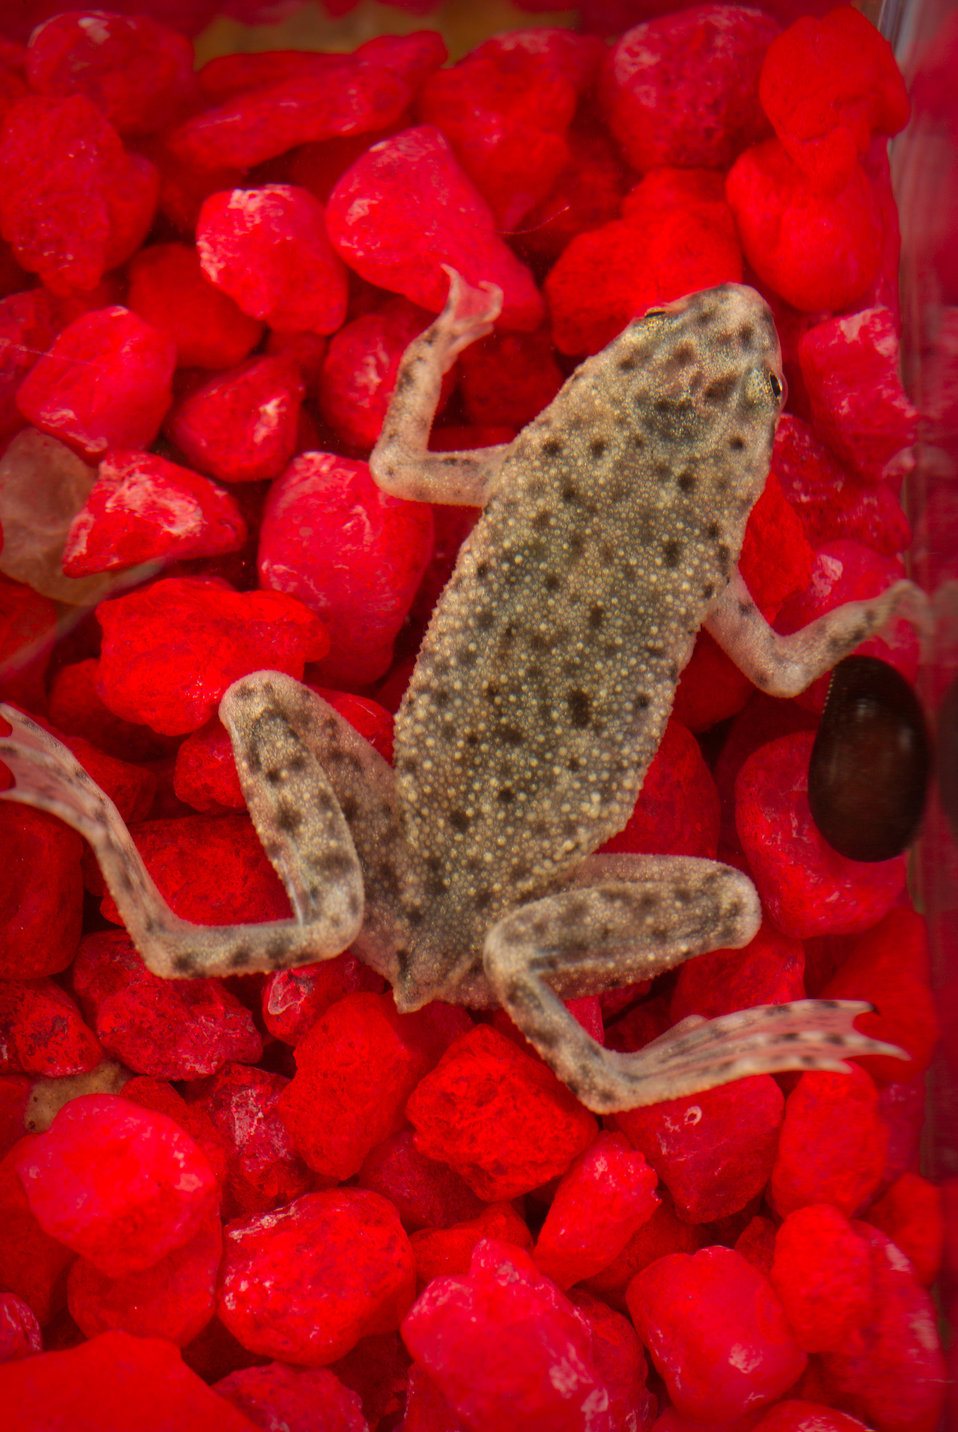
This photograph depicts an African dwarf frog, Hymenochirus boettgeri.